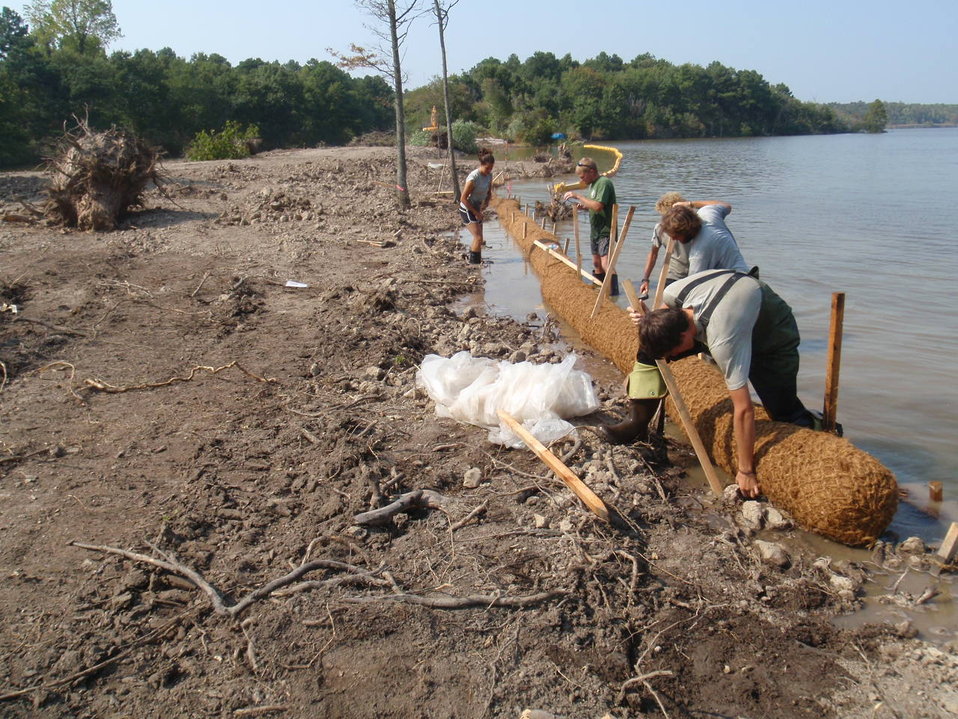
AmeriCorp volunteers assisting with Lake Tecumseh project

Volunteers from Americorp helped with construction during the Lake Tecumseh habitat restoration project. This photo shows volunteers installing a coir log to help prevent erosion.